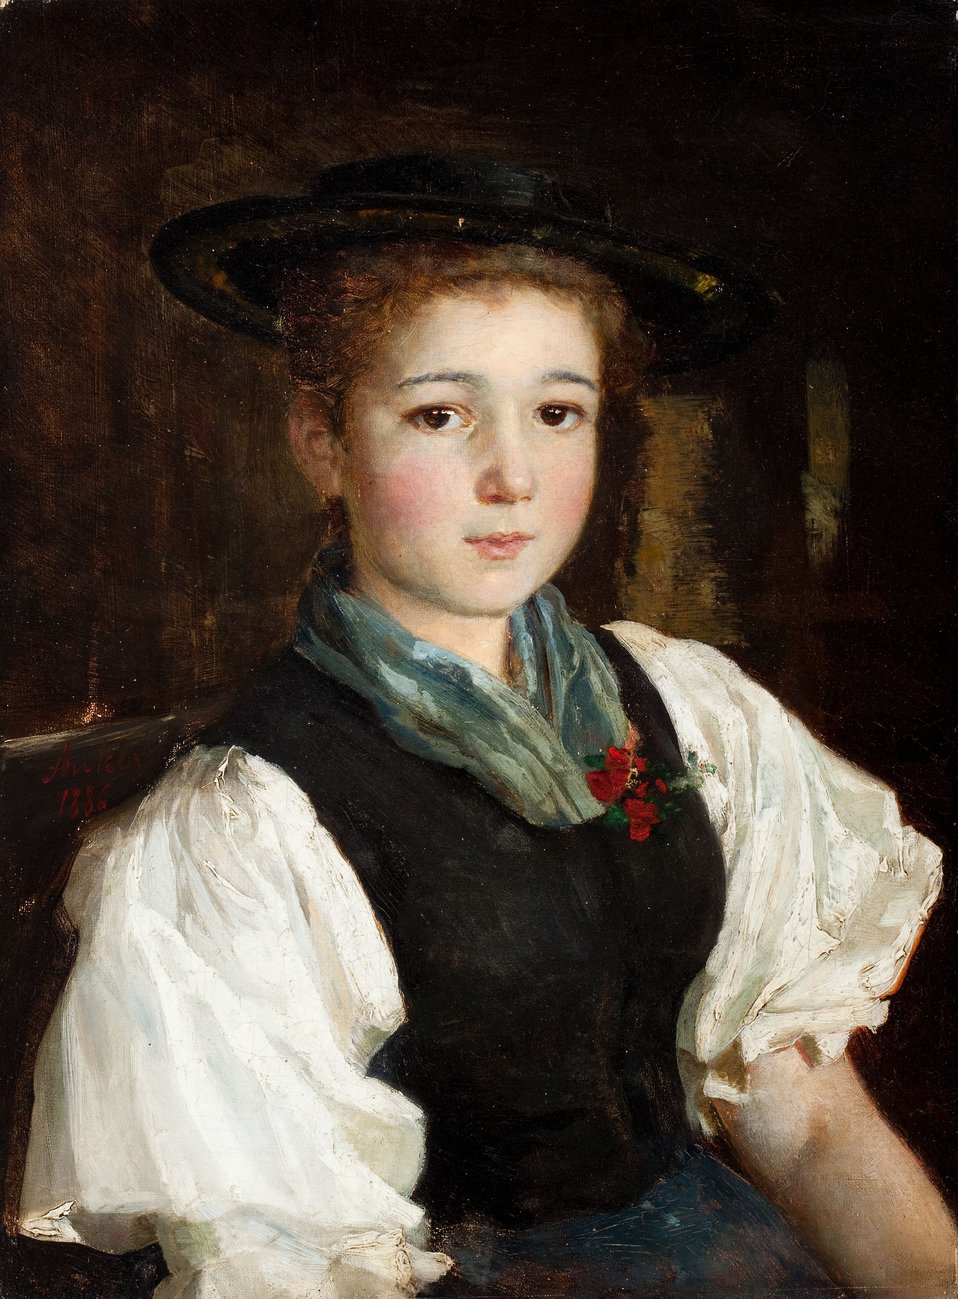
Albert Anker (zugeschr.) - Porträt eines Mädchens